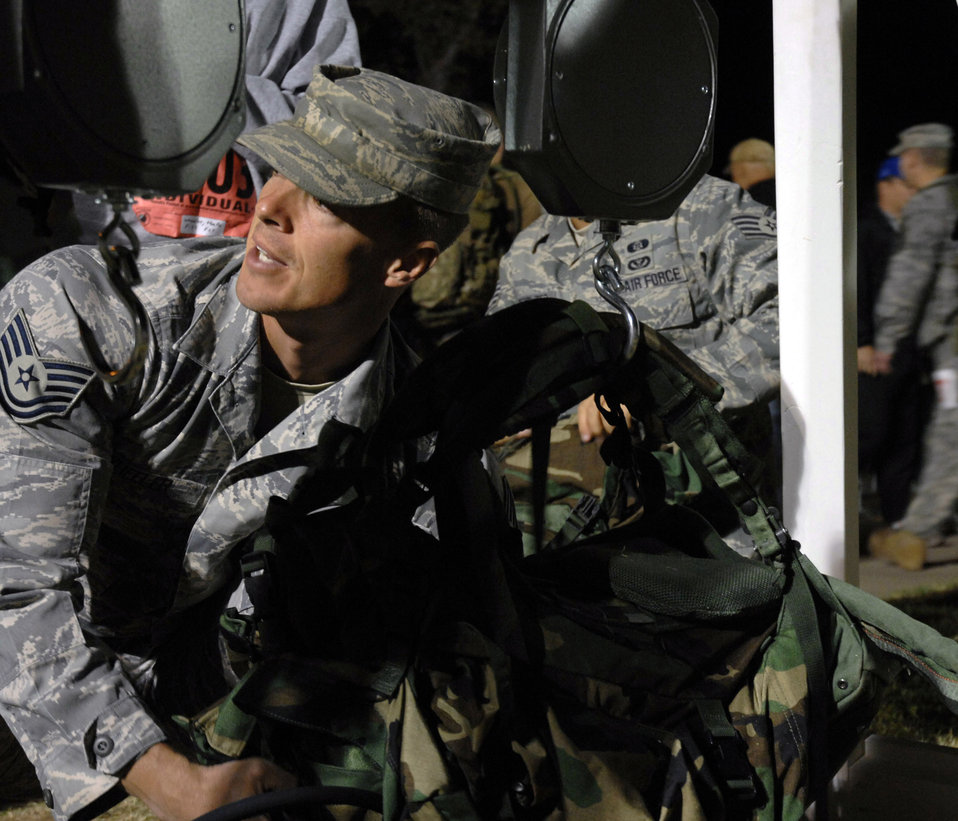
Cannon members march to honor Bataan POWs

Tech. Sgt. Daniel Wheeler weighs his rucksack before beginning the 19th Annual Bataan Death Memorial Death March March 30 at White Sands Missile Range, N.M. More than 4,400 runners and marchers participated in the 26.2 or 15-mile run/walk. Sergeant Wheeler is assigned to the 737th Training Squadron from Lackland AFB, Texas.